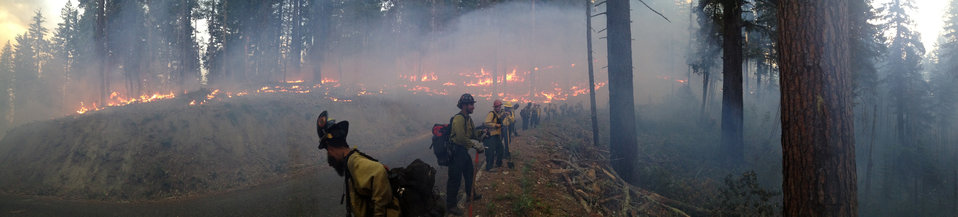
Panorama of the Geronimo Interagency Hotshot Crew (IHC) keeps watch on their burnout along a forest road. This will help stop the main fire when it comes to this location in the Big Windy Complex, approximately 15 miles west of Interstate 5 and northeast of Galice, OR, on Friday, Aug 9, 2013 in Oregon. The Geronimo Hotshots are from the San Carlos Apache Tribal Natural Resources Program, in San Carlos AZ. Hotshots are highly trained wildlands firefighters that normally work in remote locations under arduous conditions.